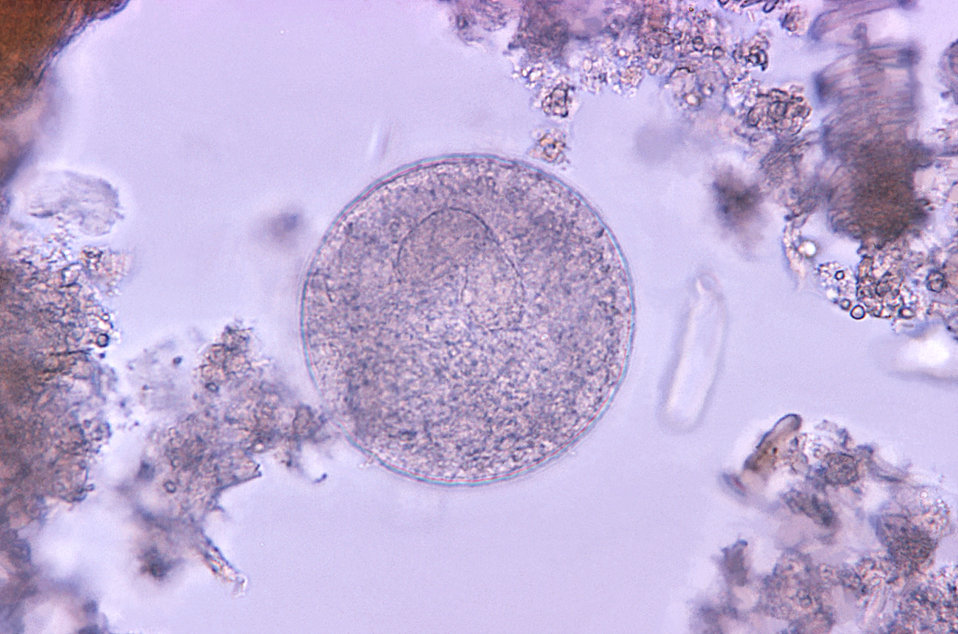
Balantidium coli cyst.